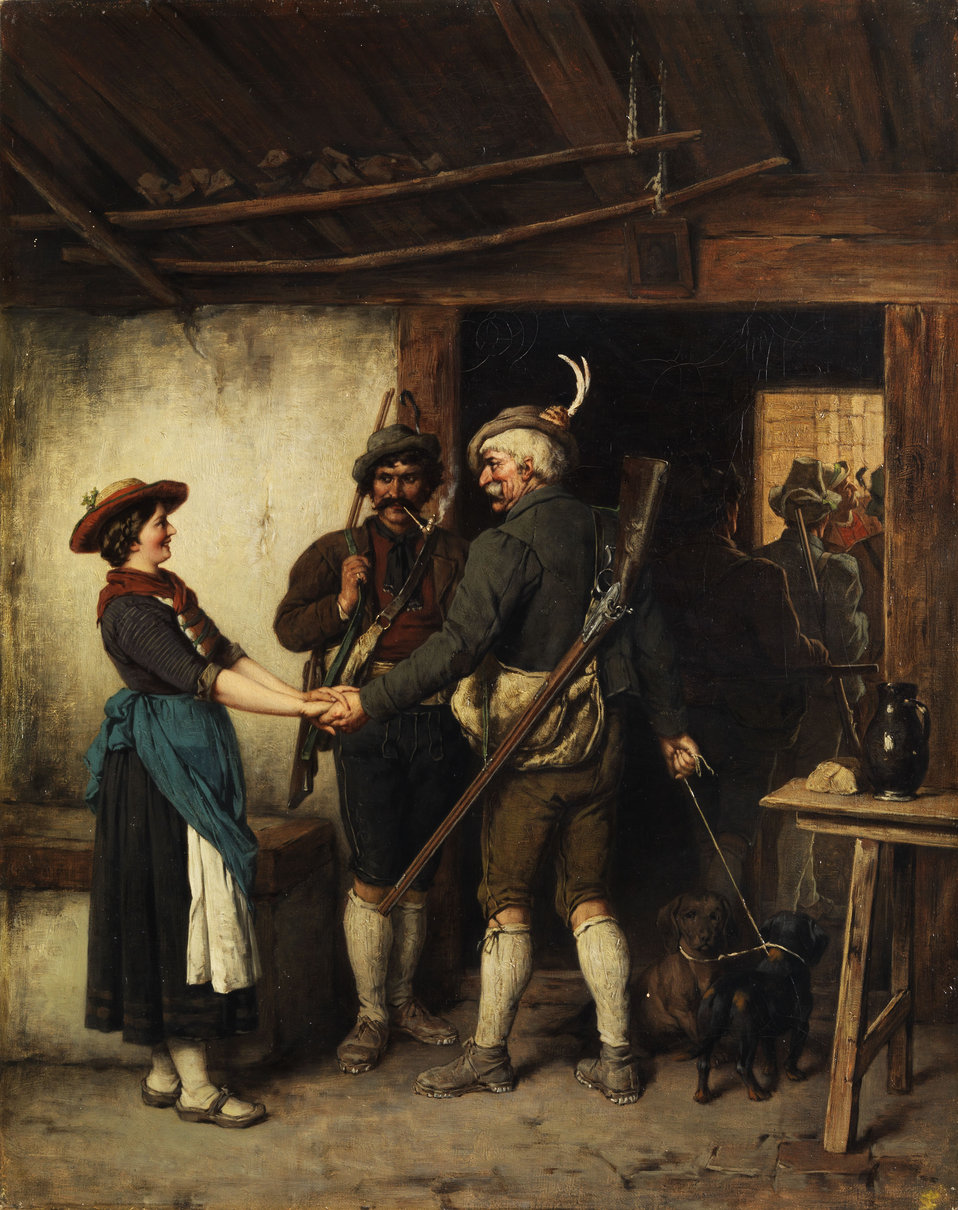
Franz von Defregger Abschied der Jäger 202441